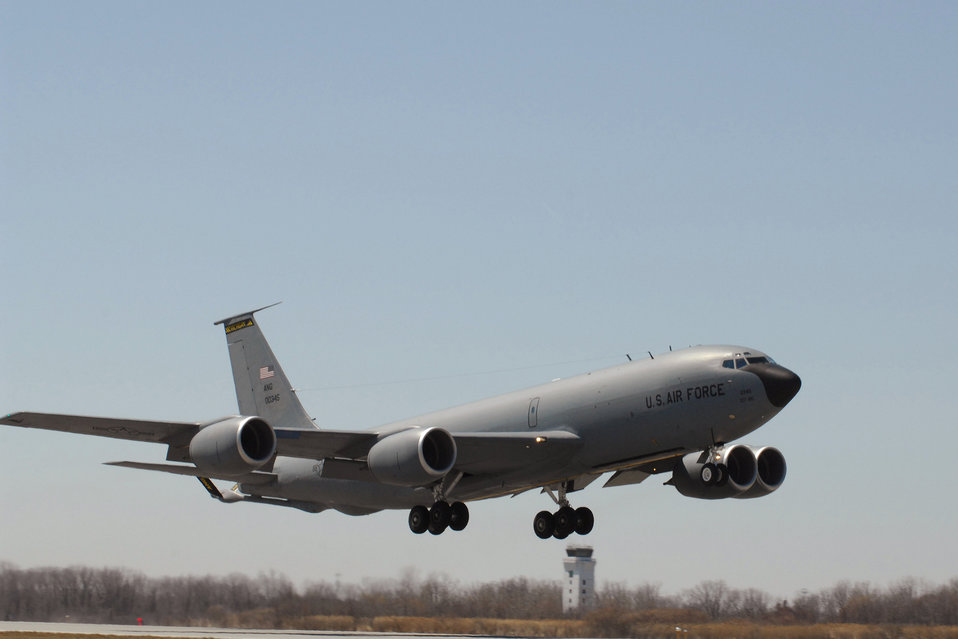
Airmen prepare KC-135

A KC-135 Stratotanker takes off April 14, 2011, from Selfridge Air National Guard Base, Mich.